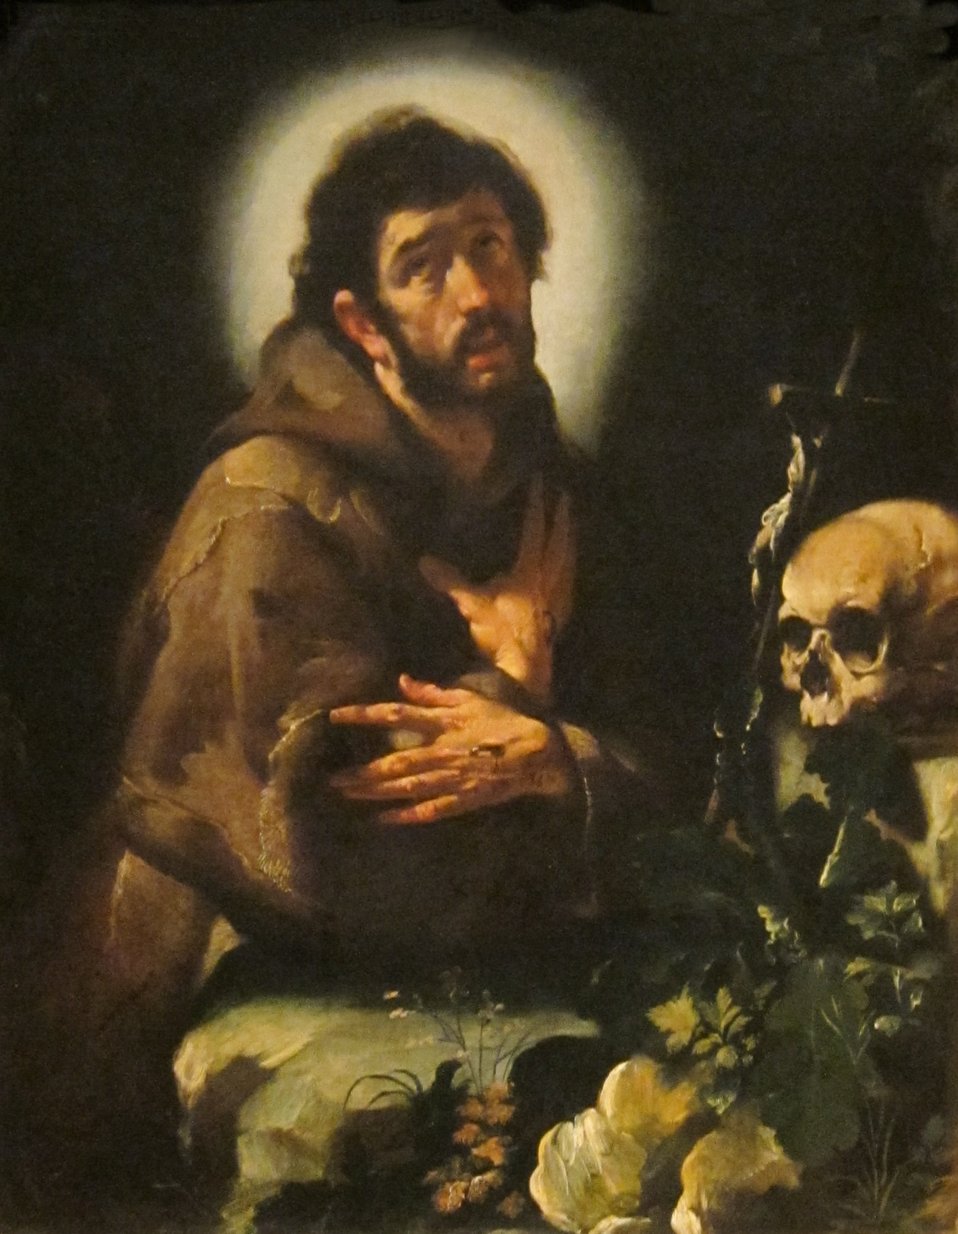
St. Francis in Ecstasy, oil on canvas painting by Bernardo Strozzi, c. 1615-18, Dayton Art Institute